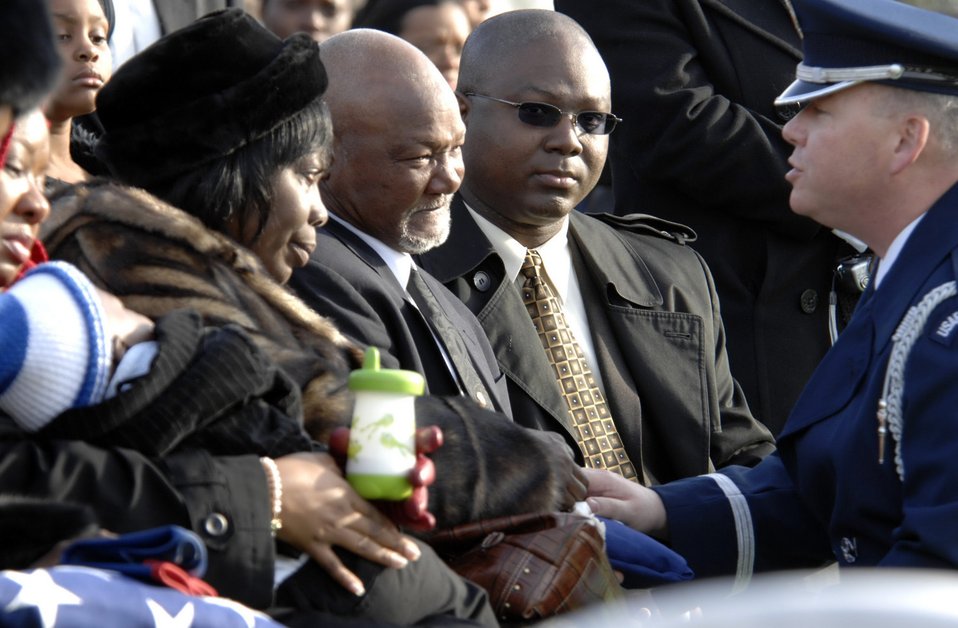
Chaplains provide honored service

Chaplain (Capt.) Kenneth Fisher is one of three Air Force chaplains assigned to Arlington National Cemetery to preside over funerals for Air Force members to be buried there. Each of the services has chaplains assigned and collectively, they conduct an average of 27 funerals a day.